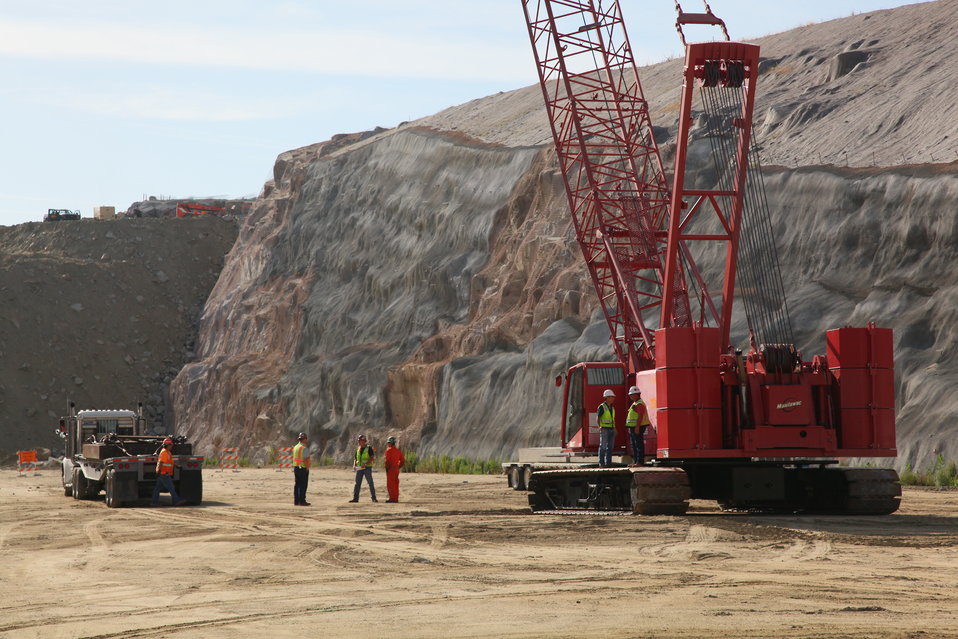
Excavating Folsom Dam’s auxiliary spillway

Excavation of the auxiliary spillway at Folsom Dam in Folsom, Calif., continues June 16, 2011. The spillway will let Folsom Dam release water sooner and more safely. The project is part of the Folsom Dam Joint Federal Project, a joint effort of the U.S. Army Corps of Engineers Sacramento District, the U.S. Bureau of Reclamation, the Central Valley Flood Protection Board and the Sacramento Area Flood Control Agency to improve the safety of the dam and reduce flood risk for the greater Sacramento area.